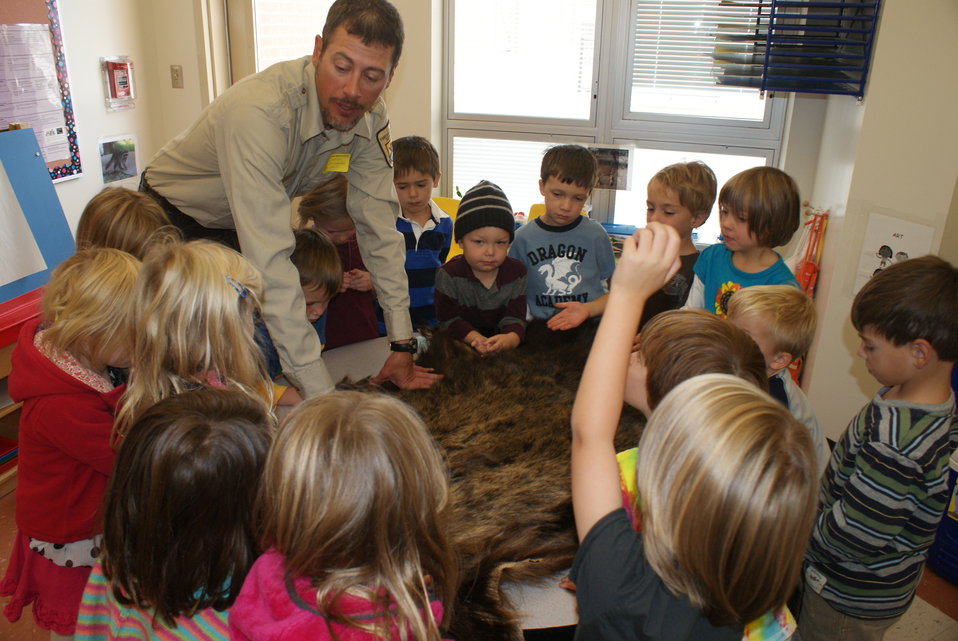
Scientists in the Community Program

U.S. Fish and Wildlife Service Mountain-Prairie Region Deputy ARD for External Affairs, Matt Kales, introduces early childhood education students at William Roberts Elementary School in Denver to some of Colorado's native and historic wildlife species.